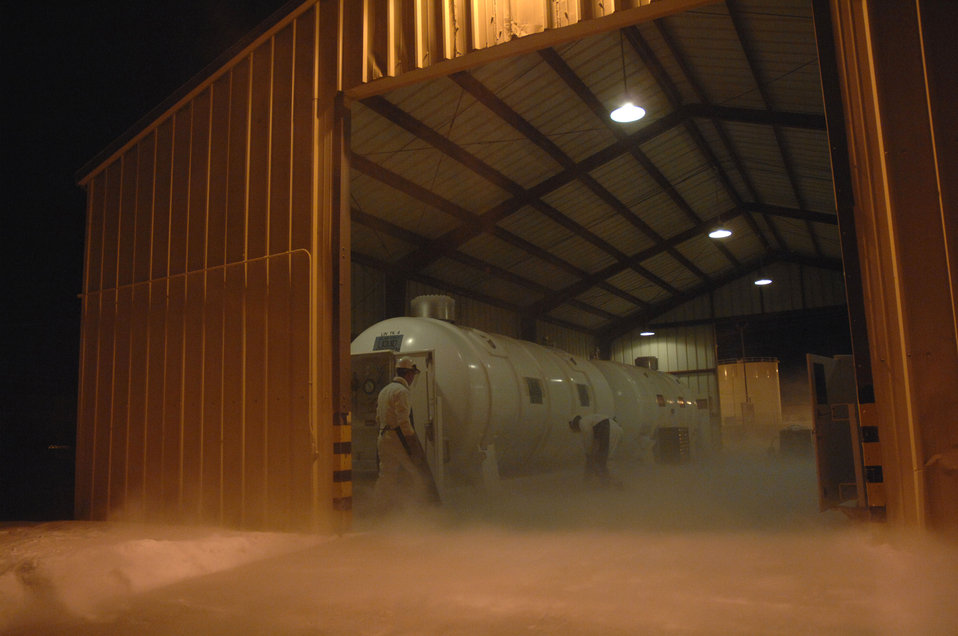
Cyrogenics is a cold business

Airman 1st Class Andrew Tuttle (left) and Staff Sgt. Kyle Evans purge the discharge tube on a liquid nitrogen tank Dec. 20 to clear any impurities that may have settled since its last use. The plume is the result of burnoff and the extremely low boiling point of liquid nitrogen. Airman Tuttle and Sergeant Evans are assigned to the 354th Logistics Readiness Squadron at Eielson Air Force Base, Alaska.